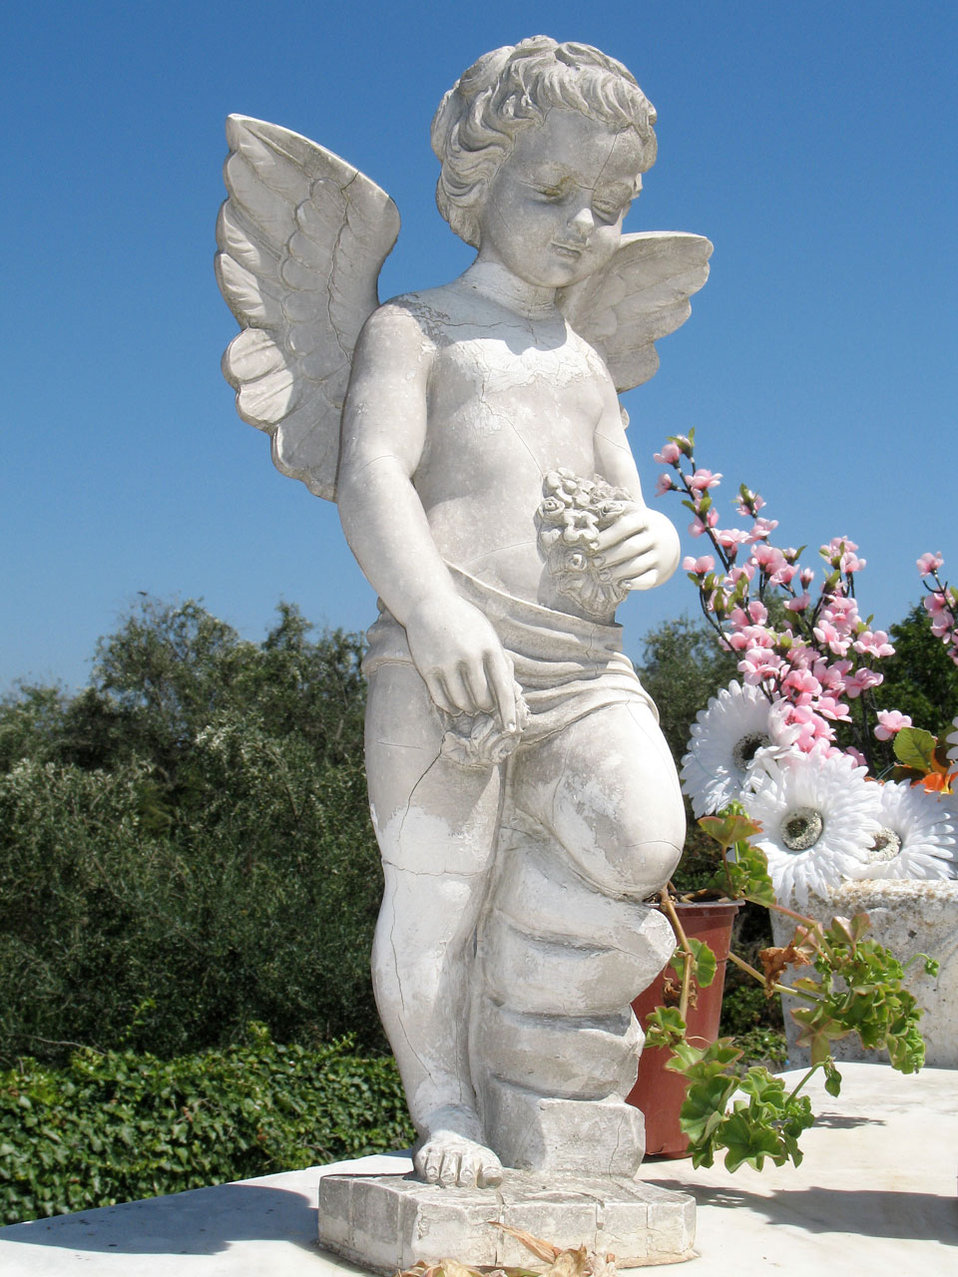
Statue of an angel

White statue of an angel with tiny wings.